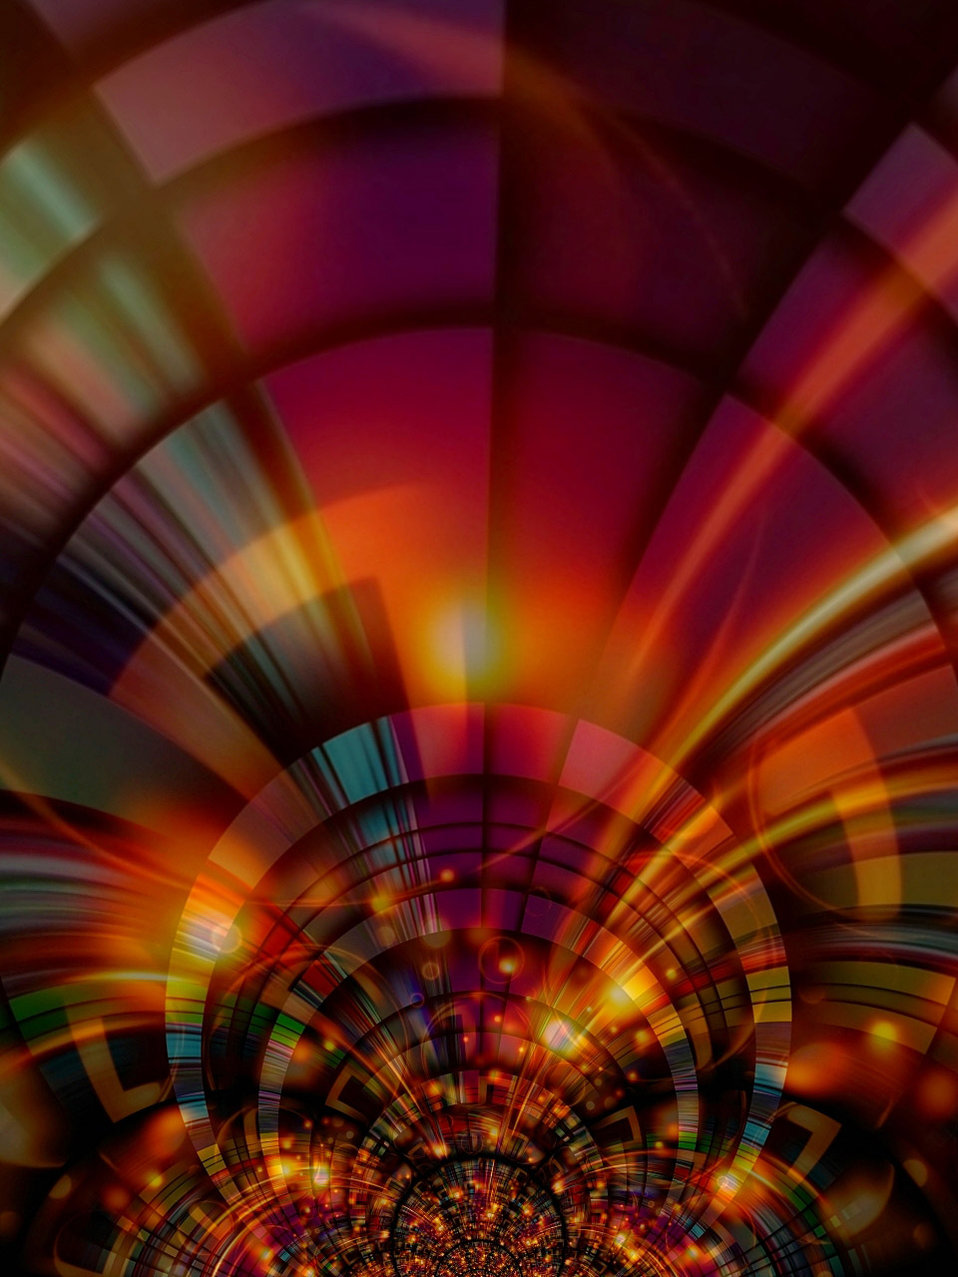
Colors explosion

Picture collage.